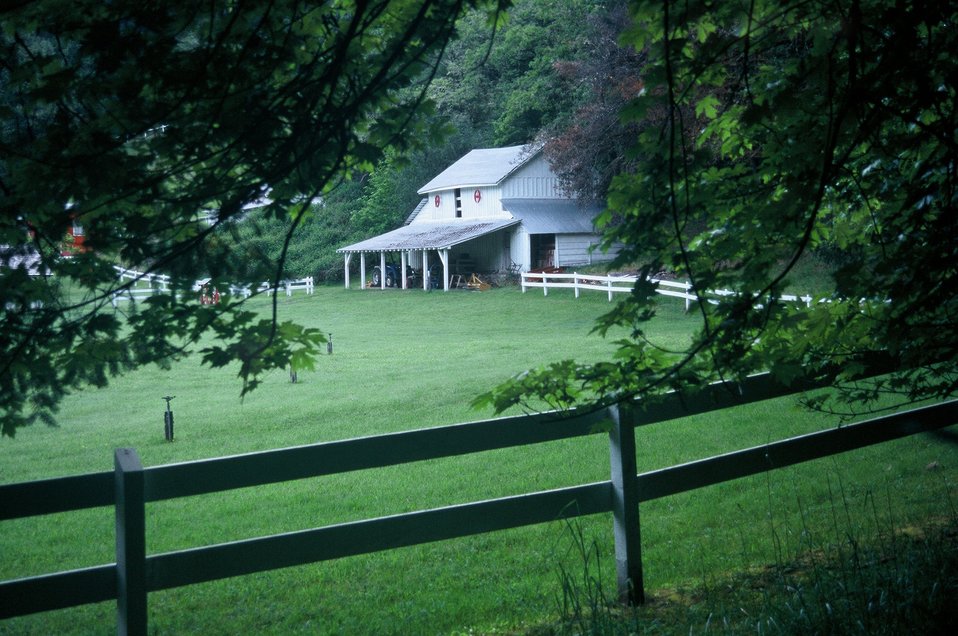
Wild section of the Rogue River from Grave Creek to Foster Bar May 19 to May 22.